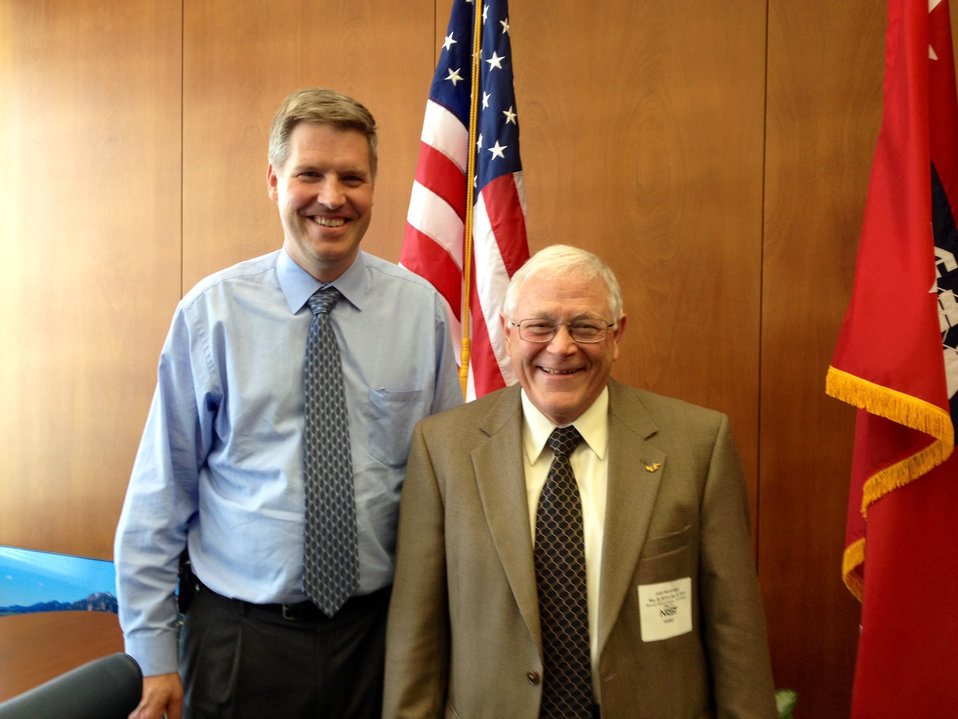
Dr. Gallagher and Dr. Hemminger

Dr. John Hemminger, VP for Research, University of California Irvine (left) meets with NIST Director Dr. Patrick Gallagher to discuss mutual measurement research collaborations.